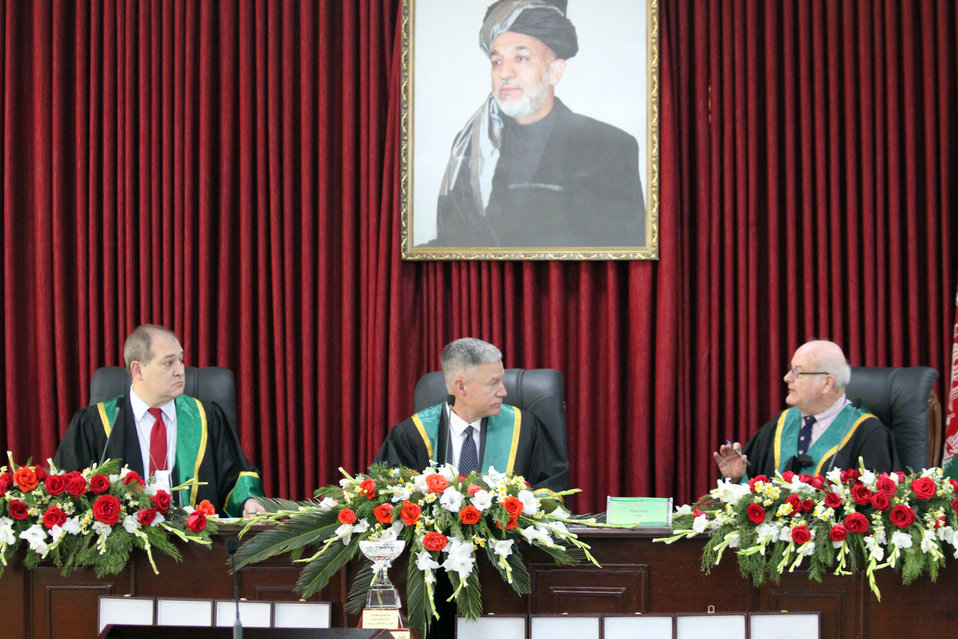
Afghanistan Final National Round of the 2013 Philip C.Jessup International Law Moot Court Competition